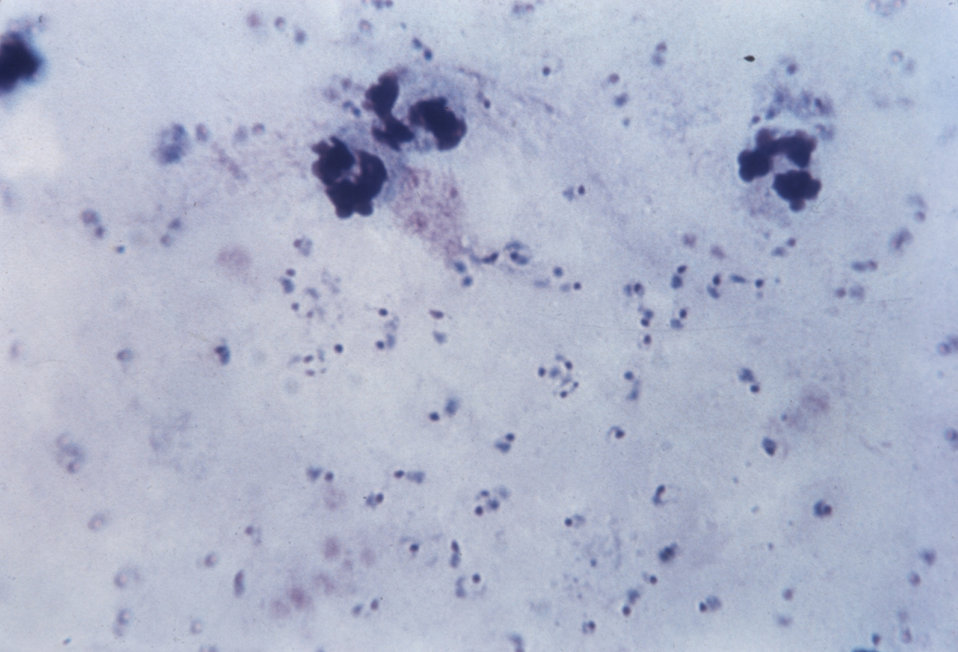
This photomicrograph depicts P. falciparum rings along with various broken ring forms, white cell nuclei and platelets.